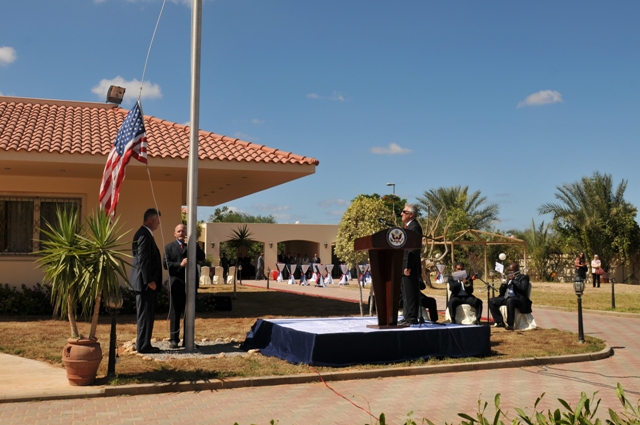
Ambassador Cretz Stands at the Podium

U.S. Ambassador to Libya Gene A. Cretz stands at the podium during a flag raising ceremony for the U.S. Embassy in Tripoli, Libya, on September 22, 2011.